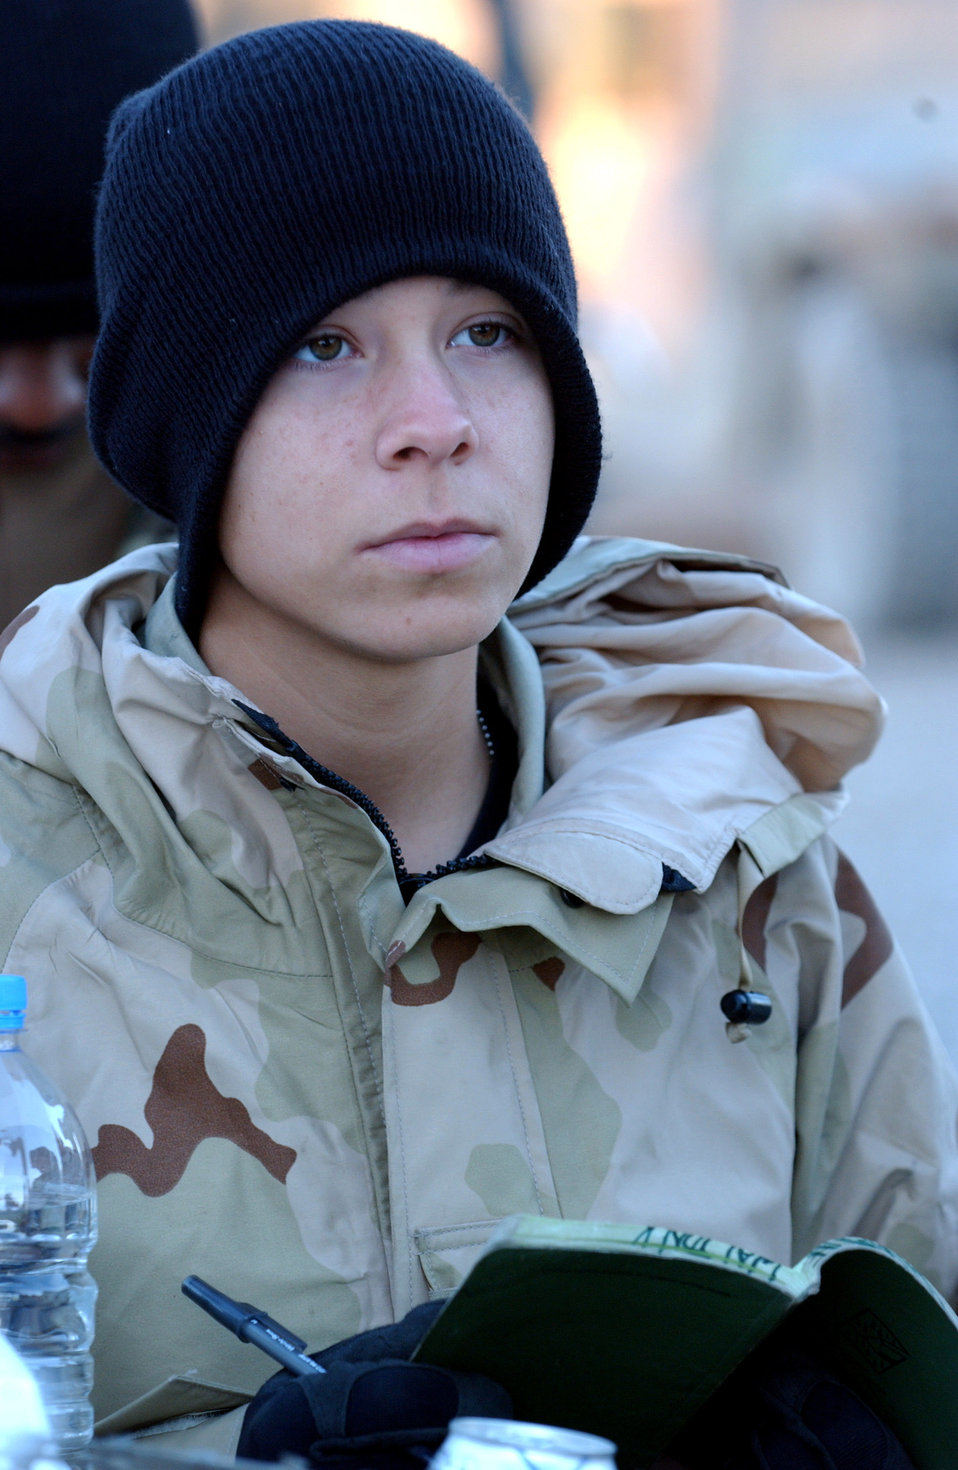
Patrolling Baghdad

Airman 1st Class Kimberly Walton attends a mission brief prior to a patrol of Baghdad, Iraq, Nov. 10. She is with Detachment 7, 732nd Expeditionary Security Forces Squadron whose mission is to deploy into the city streets to assist Iraqi police in achieving self-sufficiency and enable orderly control of their battle space.